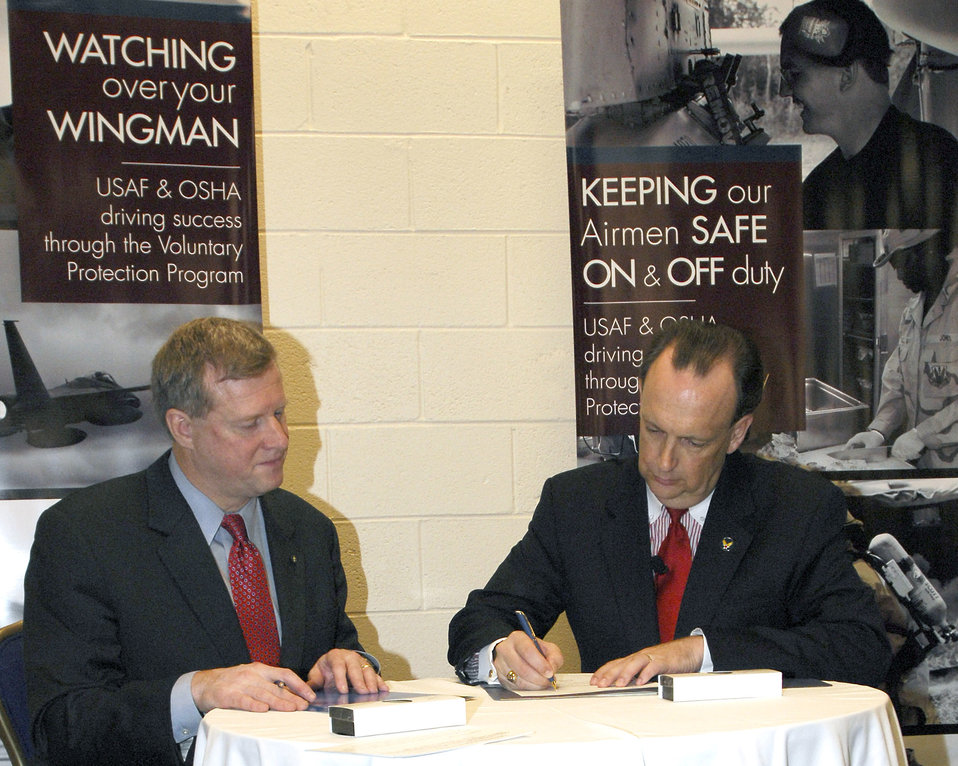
Program takes safety, occupational health to next level

Edwin G. Foulke (left) and William C. Anderson sign a partnership agreement between the Air Force and Occupational Safety and Health Administration Aug. 27 in Washington, D.C. The agreement formalizes each organization's commitment to improve safety and health, and reduce injuries and illness within the Air Force through the Voluntary Protection Program. Mr. Foulke is the assistant secretary for Occupational Safety and Health, and Mr. Anderson is the assistant secretary of the Air Force for installations, environment and logistics.